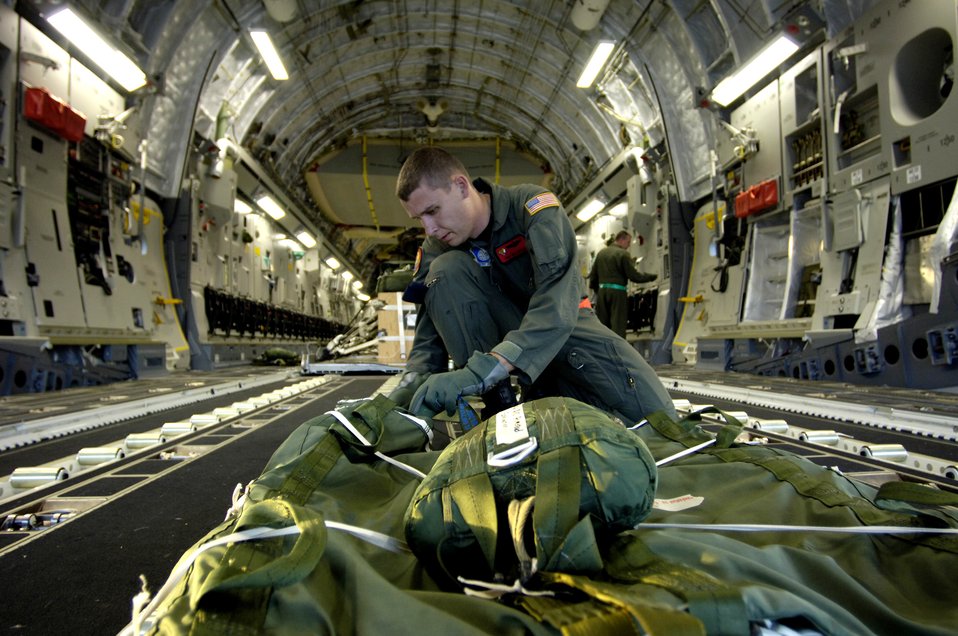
C-17 airdrop training mission

Tech. Sgt. Ken Bragg inspects and prepares an extraction chute on his C-17 Globemaster III for an upcoming airdrop training mission May 16, 2006, at Hickam Air Force Base, Hawaii. Sergeant Bragg is a loadmaster from the 535th Airlift Squadron. The training provides multi-element training for the pilots enables users to get larger amounts of equipment in a short period of time and maintains aircrew proficiency.